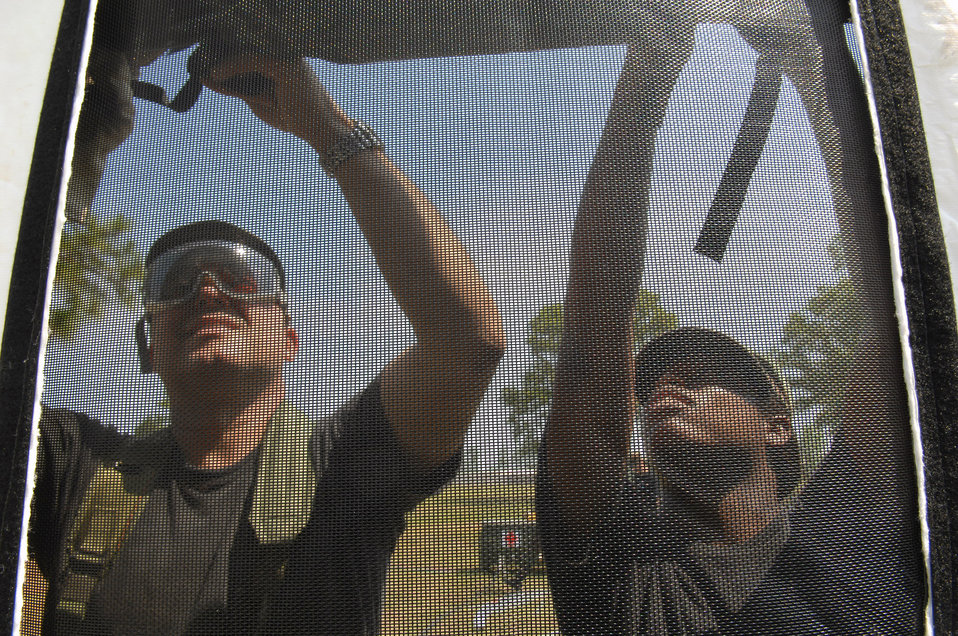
Golden Medic 2007

Lt. Col. Antonio Martinez and Senior Airman LaKesha Bryant help put up an Alaskan Medical Shelter by lashing down window and door flaps during